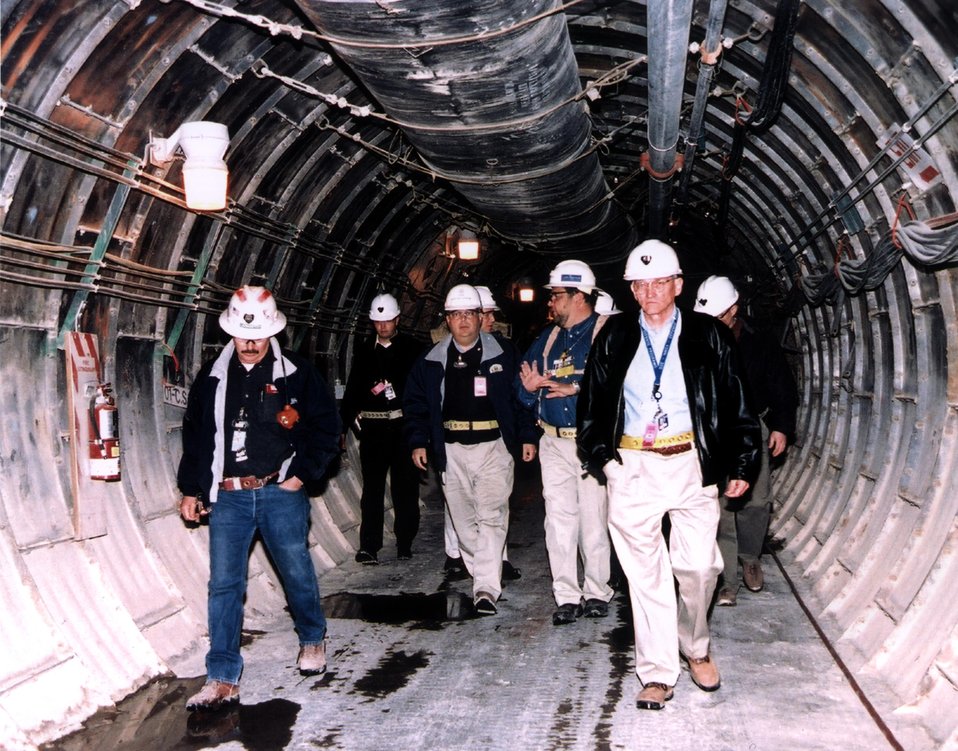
SECRETARY OF ENERGY SPENCER ABRAHAM INSIDE THE U1A COMPLEX AT NEVADA TEST SITE.

THE U1A COMPLEX AT THE NEVADA TEST SITE, AN UNDERGROUND LABORATORY OF TUNNELS BUILT ABOUT 960 FT. BENEATH THE SURFACE, IS DESIGNED TO CONDUCT SUBCRITICAL HIGH EXPLOSIVE EXPERIMENTS, MEANING NO CRITICAL MASS IS FORMED, I.E. NO NUCLEAR CHAIN REACTION. SCIENTIFIC DATA ON THE BEHAVIOR OF NUCLEAR WEAPON MATERIALS IS OBTAINED BY USING COMPLEX, HIGH SPEED MEASUREMENT INSTRUMENTS. ABOVE GROUND THERE ARE TEMPORARY BUILDINGS AND INSTRUMENTATION TRAILERS.